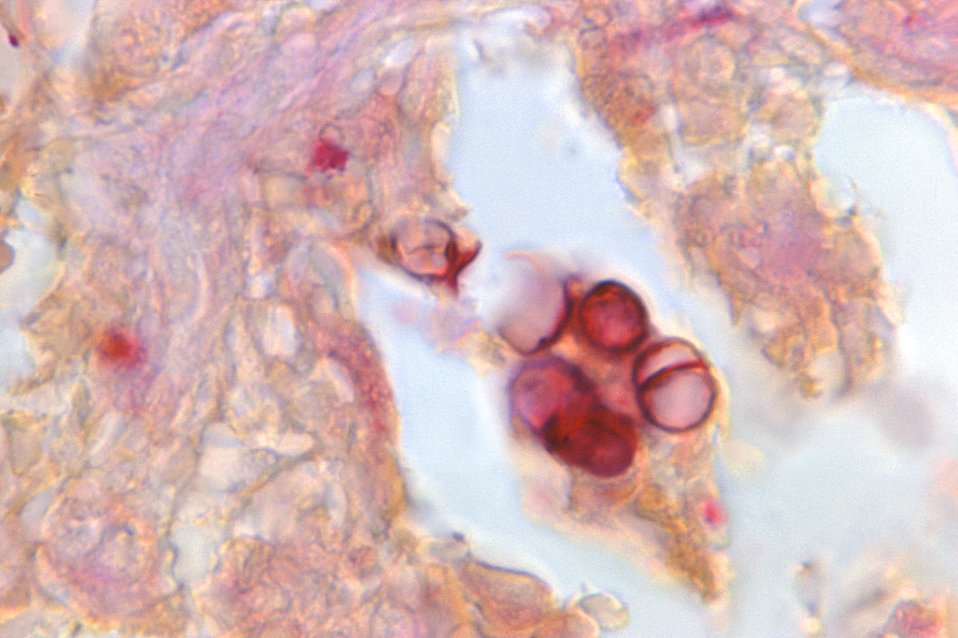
Magnified 1188X, this Gridley-stained photomicrograph revealed histopathologic changes, which were indicative of the chronic fungal disease process known as chromoblastomycosis, or chromomycosis. The tissue sample was harvested from an Indian patient. Predominantly, this infection affects the skin, or cutaneous tissues, and usually begins at the site of a puncture wound, which introduces the pathologic fungal organism into the recipient's tissues.